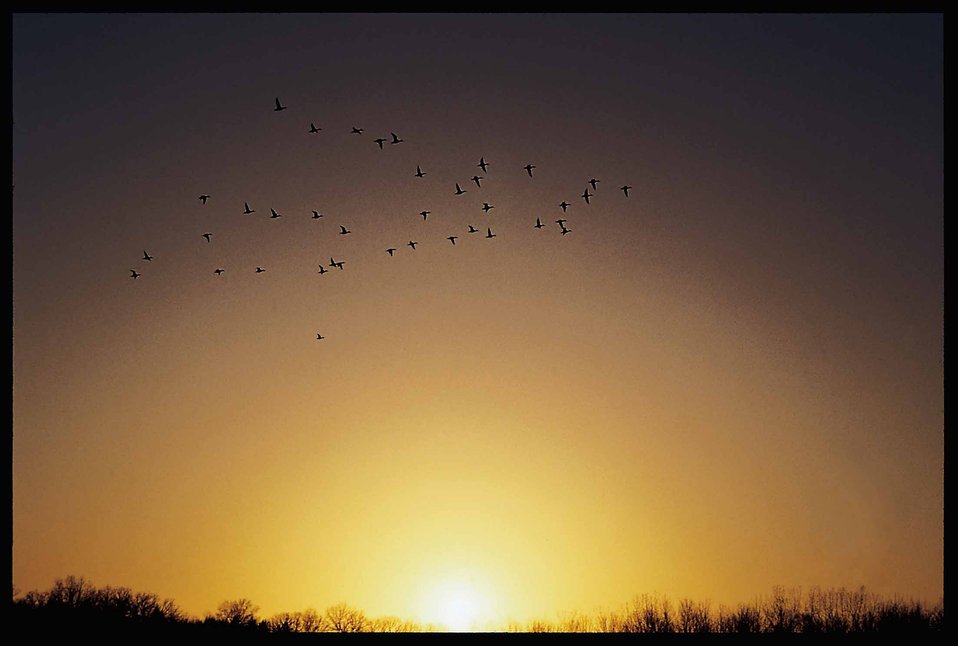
Ducks flying across a sunset

Ducks flying above a restored wetland in Van Buren County, Iowa.